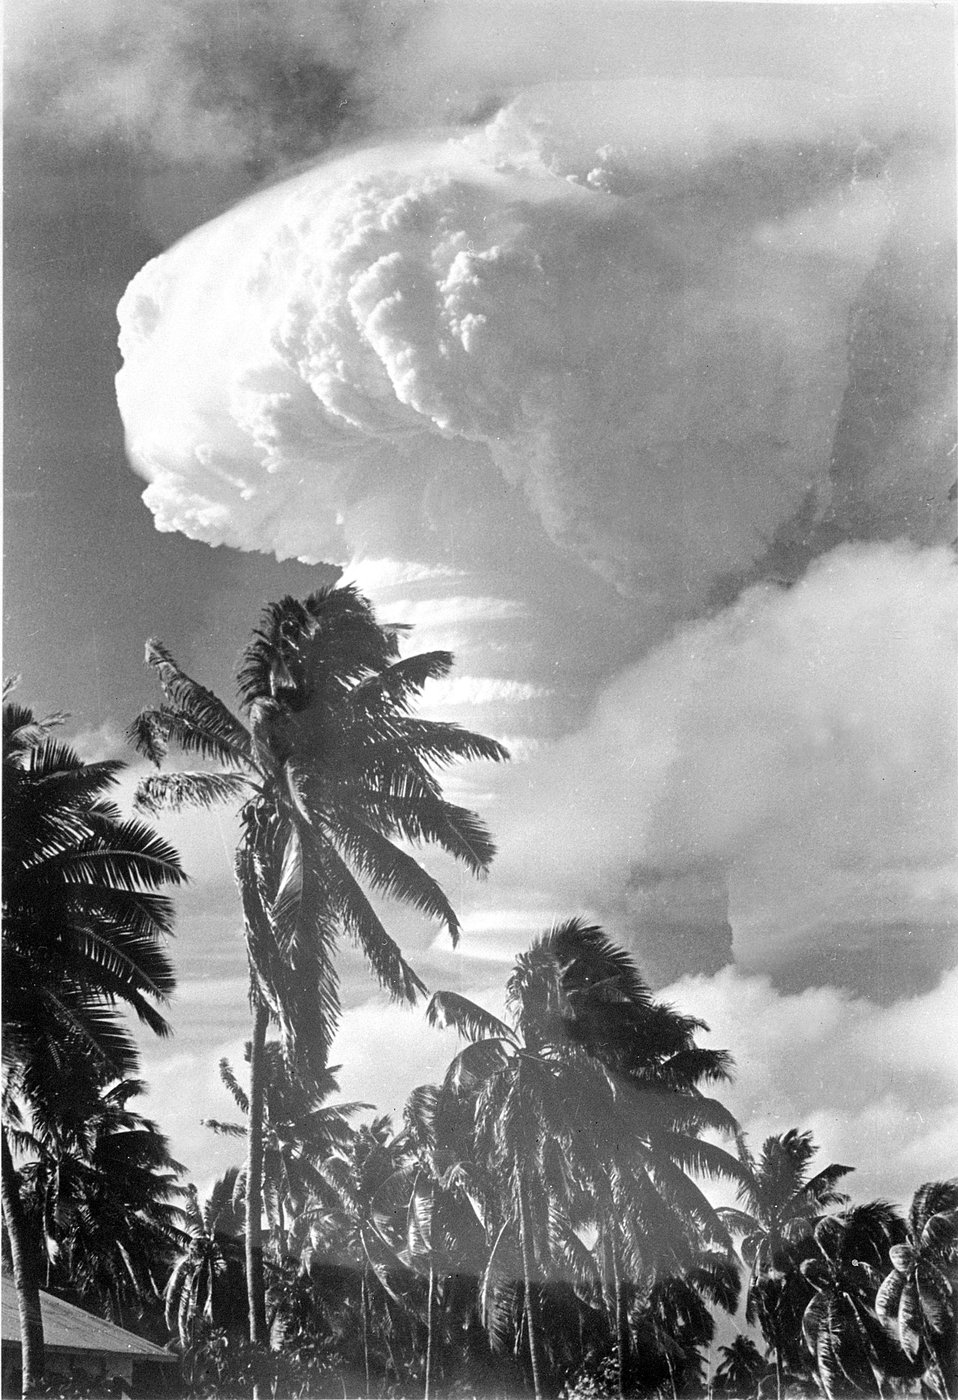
Significant Atomic Bombs and Tests, Pacific Tests, Christmas Islands, 1962